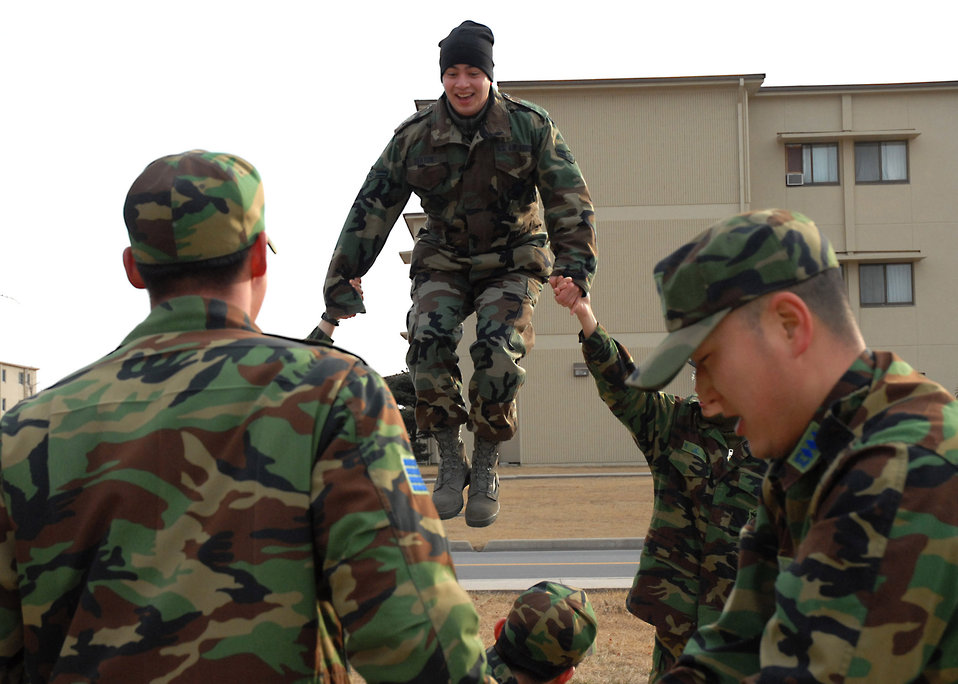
Lunar New Year event strengthens ties, cultural awareness

Airman 1st Class Michael Deaton plays a see-saw game with South Korea military members during a Lunar New Year event held Feb. 7at Kunsan Air Base, South Korea. The event is one of many events hosted by the South Korean air force members in order to strengthen ties and gain cultural awareness with U.S. military members. Airman Deaton is with the 8th Communications Squadron.